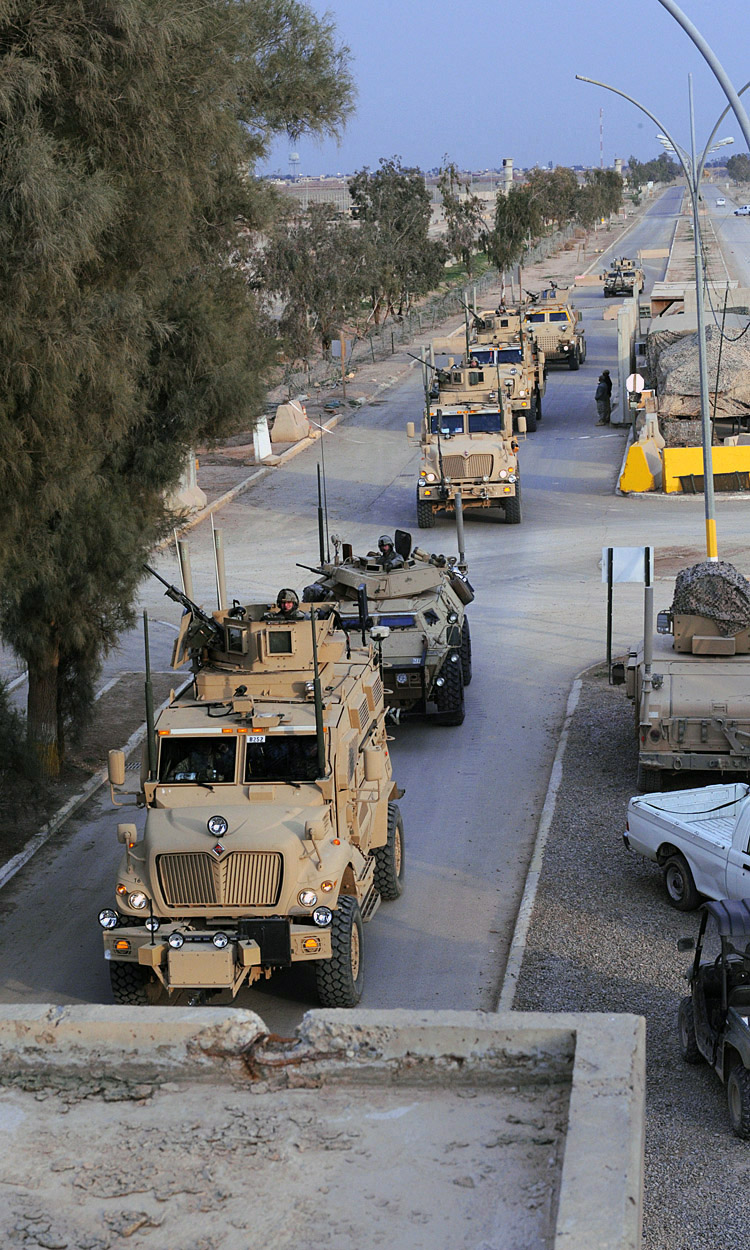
Enter with caution

From the high security viewpoint of Airman 1st Class Travis Oswald, a convoy approaches one of the entry points at Joint Base Balad, Iraq. Airman Oswald is assigned to the 532nd Expeditionary Security Forces Squadron, and is a native of Nampa, Idaho.